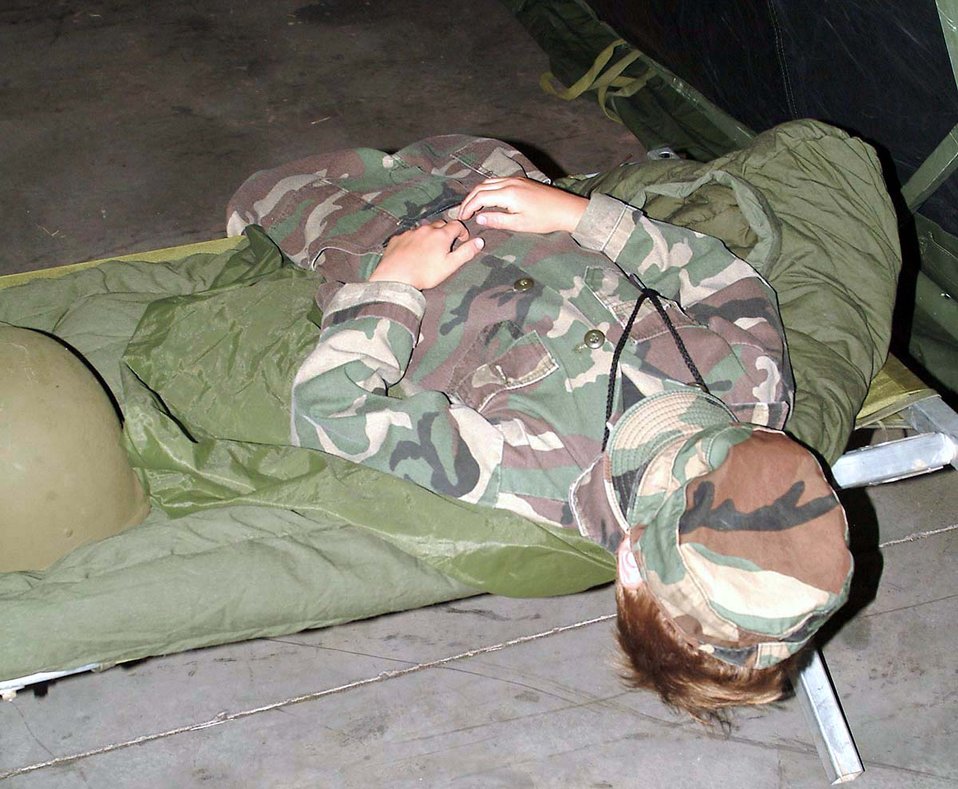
Catchin some Zs

TINKER AIR FORCE BASE, Okla. -- Joseph Brown takes a break from the rigors of living on